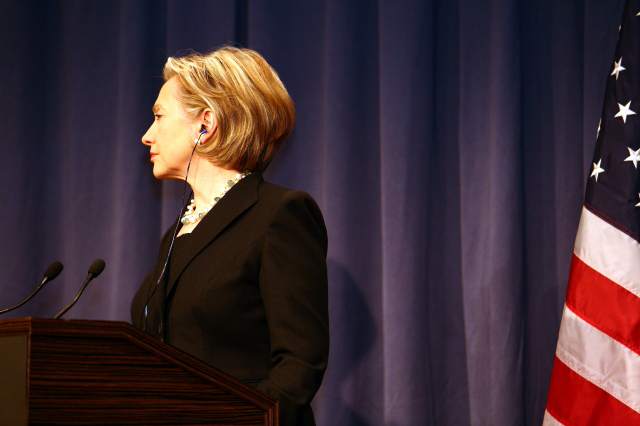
Press Conference With Russian Foreign Minister

Press conference after dinner meeting between U.S. Secretary of State Hillary Rodham Clinton and Russian Foreign Minister Sergey Lavrov in Geneva, Switzerland March 6, 2009.